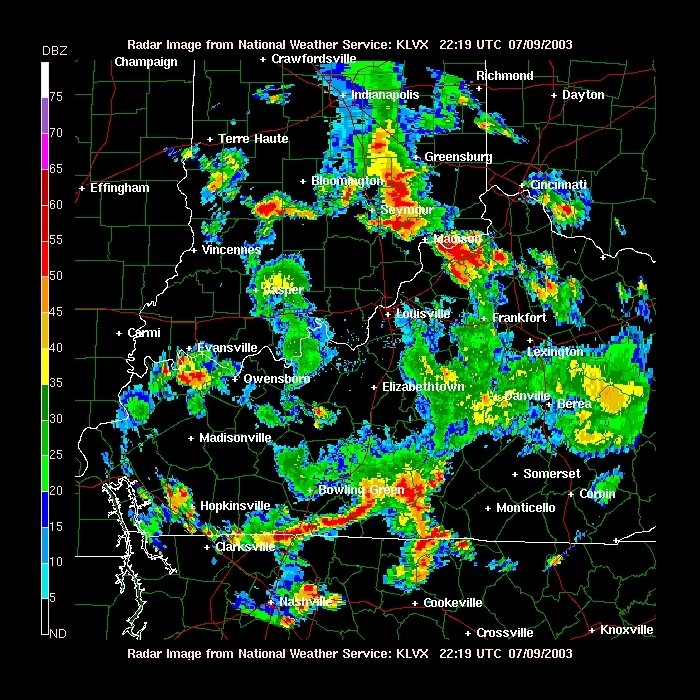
A stormy night in Indiana, Kentucky,and Tennessee.